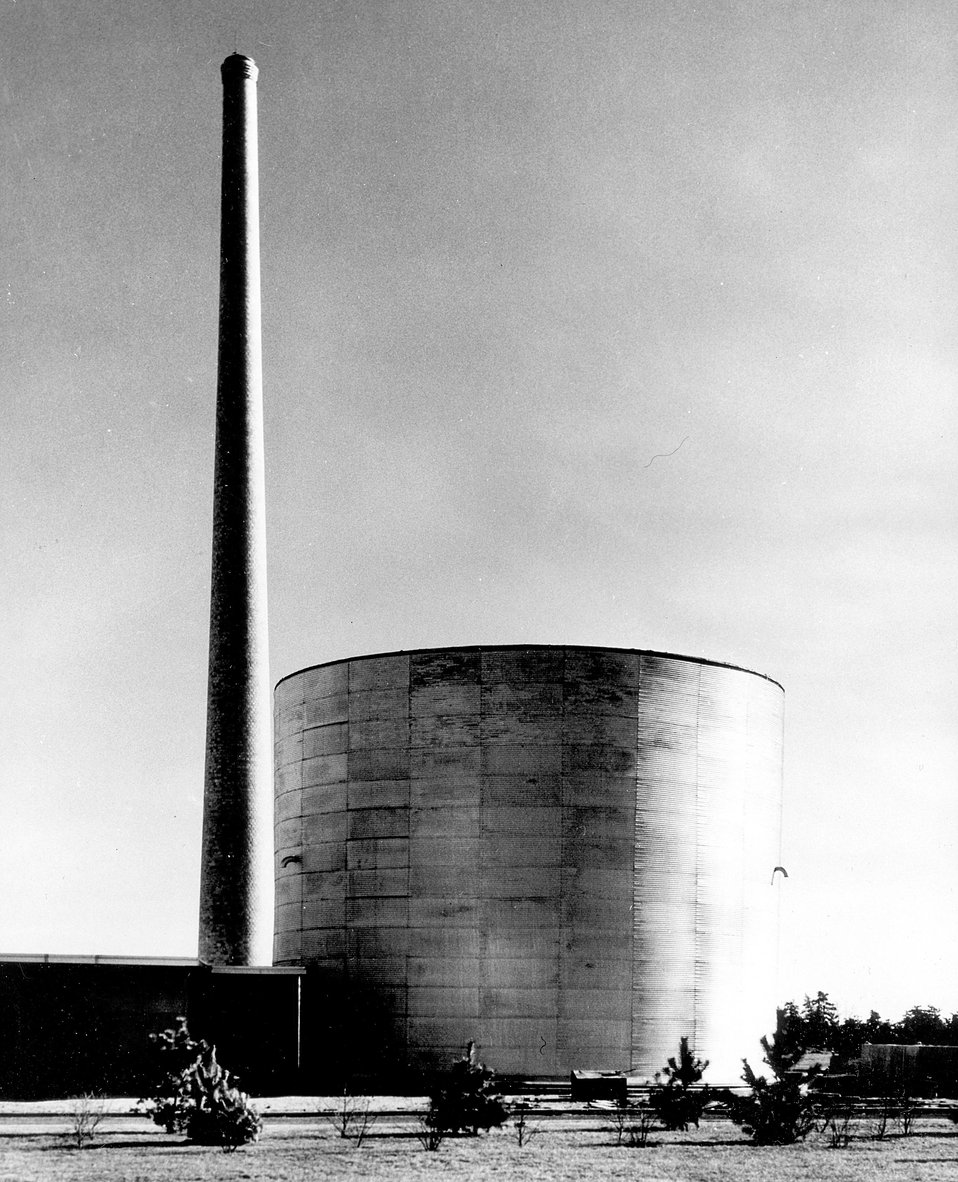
Cooling air for the reactor's graphite reflector is forced out of the 150-ft stack at the Medical research reactor building at Brookhaven.
c.1960